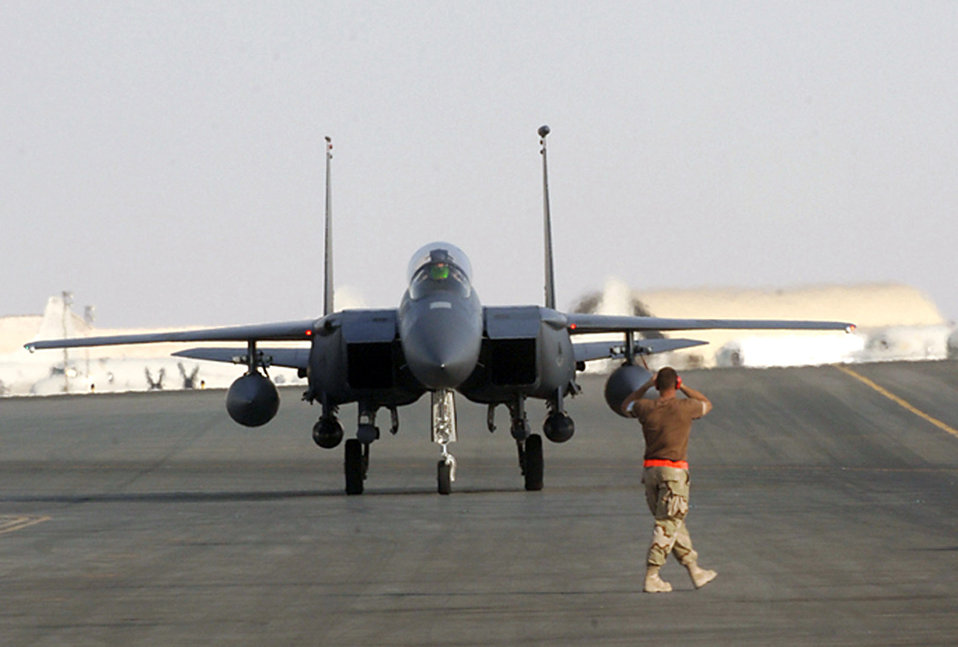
Airpower Summary for June 19, 2007

F-15E Strike Eagles support coalition ground forces in Afghanistan. The Strike Eagle is a dual-role fighter designed to perform air-to-air and air-to-ground missions. An array of avionics and electronics systems gives the F-15E the capability to fight at low altitude, day or night, and in all weather.